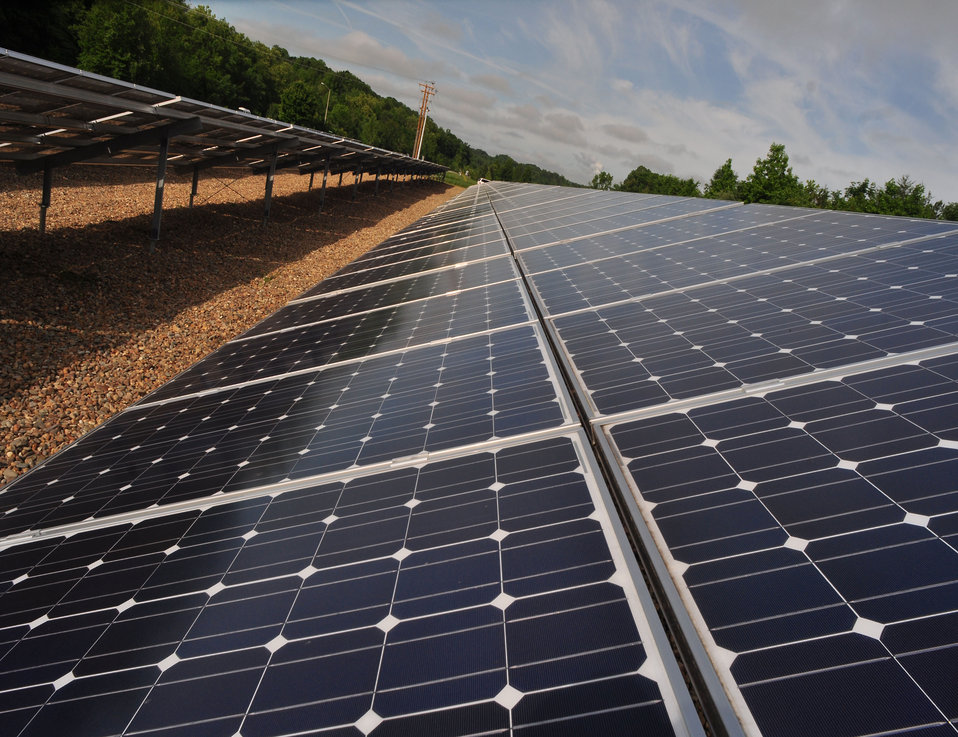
RSI Brightfield 1 solar array at East Tennessee Technology Park

12-086-262 DOE photo by Lynn Freeny

Oak Ridge Tennessee 5/15/2012